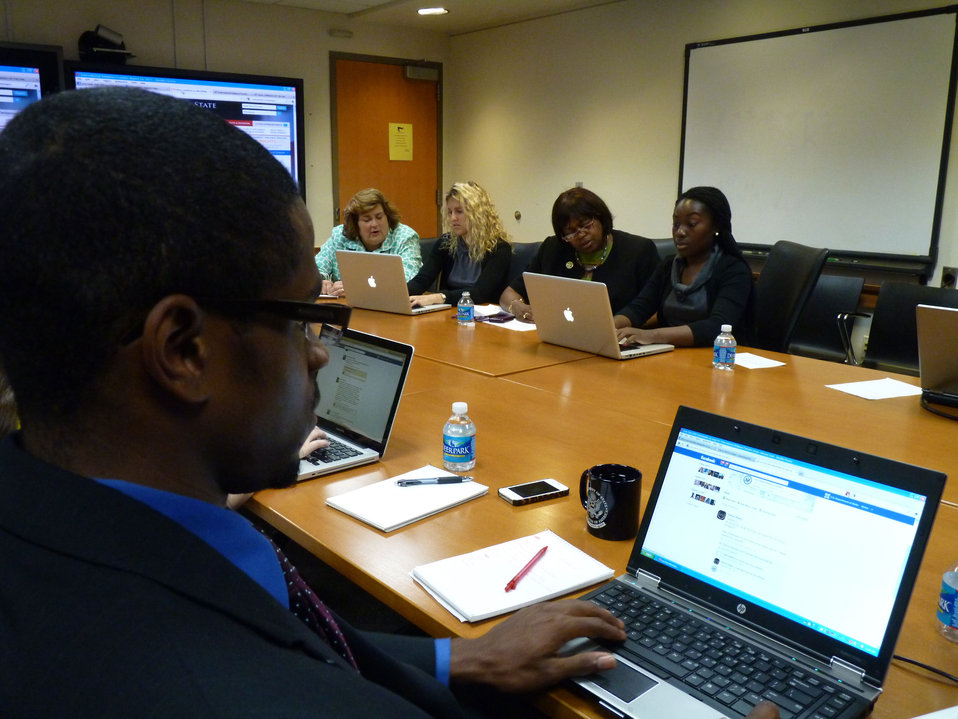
Ambassador Suzan Johnson Cook Participates in a Facebook Chat

Ambassador-at-Large for International Religious Freedom Suzan Johnson Cook participates in a Facebook chat at the U.S. Department of State in Washington, D.C., on August 7, 2012.